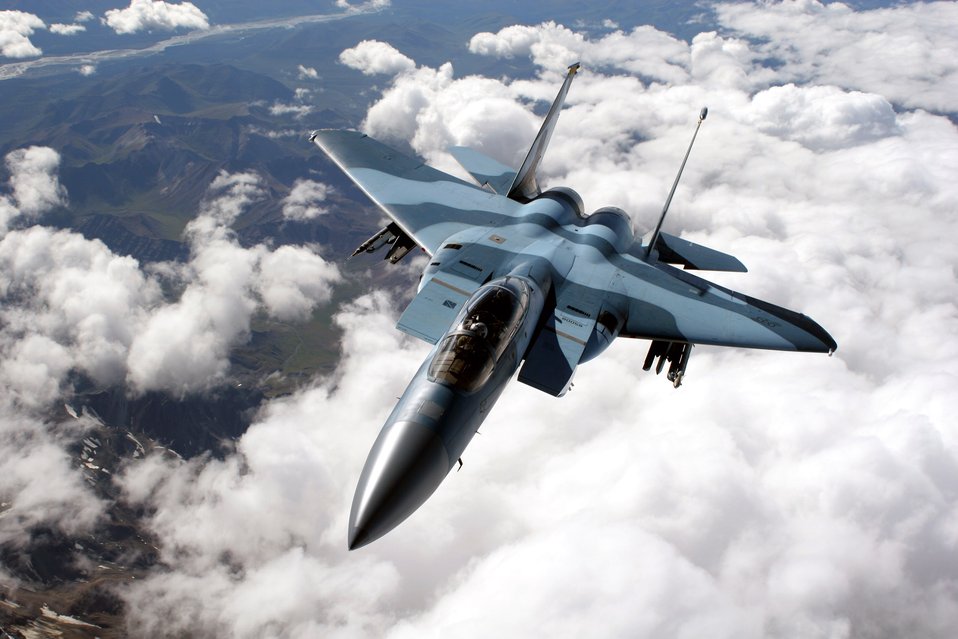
Aggressor at Red Flag Alaska

An F-15C Aggressor from the 65th Aggressor Squadron at Nellis Air Force Base, Nev., flies over a mountain range on a refueling mission at Red Flag-Alaska July 25. Red Flag-Alaska enables aviation units to sharpen their combat skills by flying simulated combat sorties in a realistic threat environment. More than 80 aircraft and 1,500 servicemembers from six countries are participating in the exercise July 12 to 27.